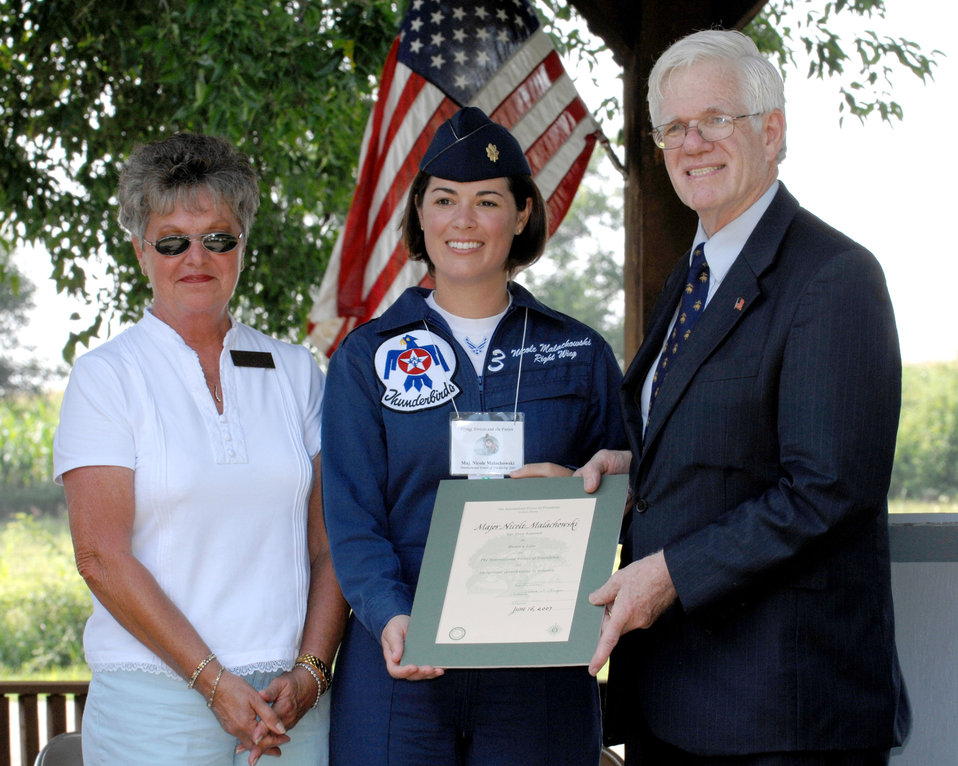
Thunderbird sees the forest for the trees

Dr. Linton Wells (right), co-founder of the International Forest of Friends, awards Maj. Nicole Malachowski an induction certificate into the Forest Aug 4 at Atchison, Kan. She is first female pilot with the Thunderbirds.